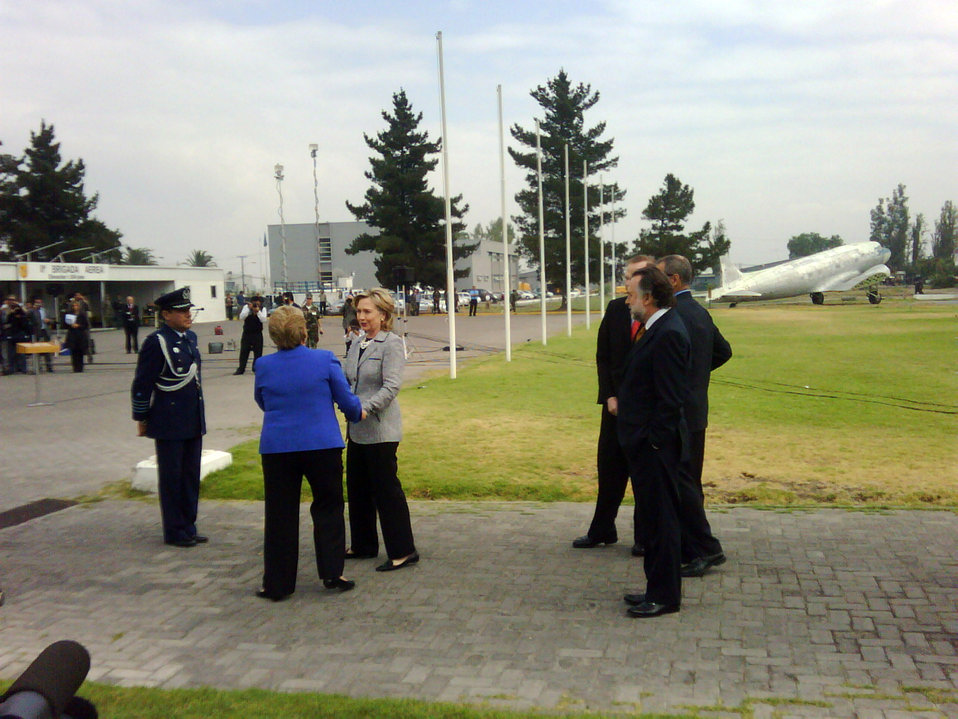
Secretary Clinton Arrives in Chile

U.S. Secretary of State Hillary Rodham Clinton is greeted at the airport by President Michelle Bachelet of Chile in Santiago, Chile March 2, 2010.